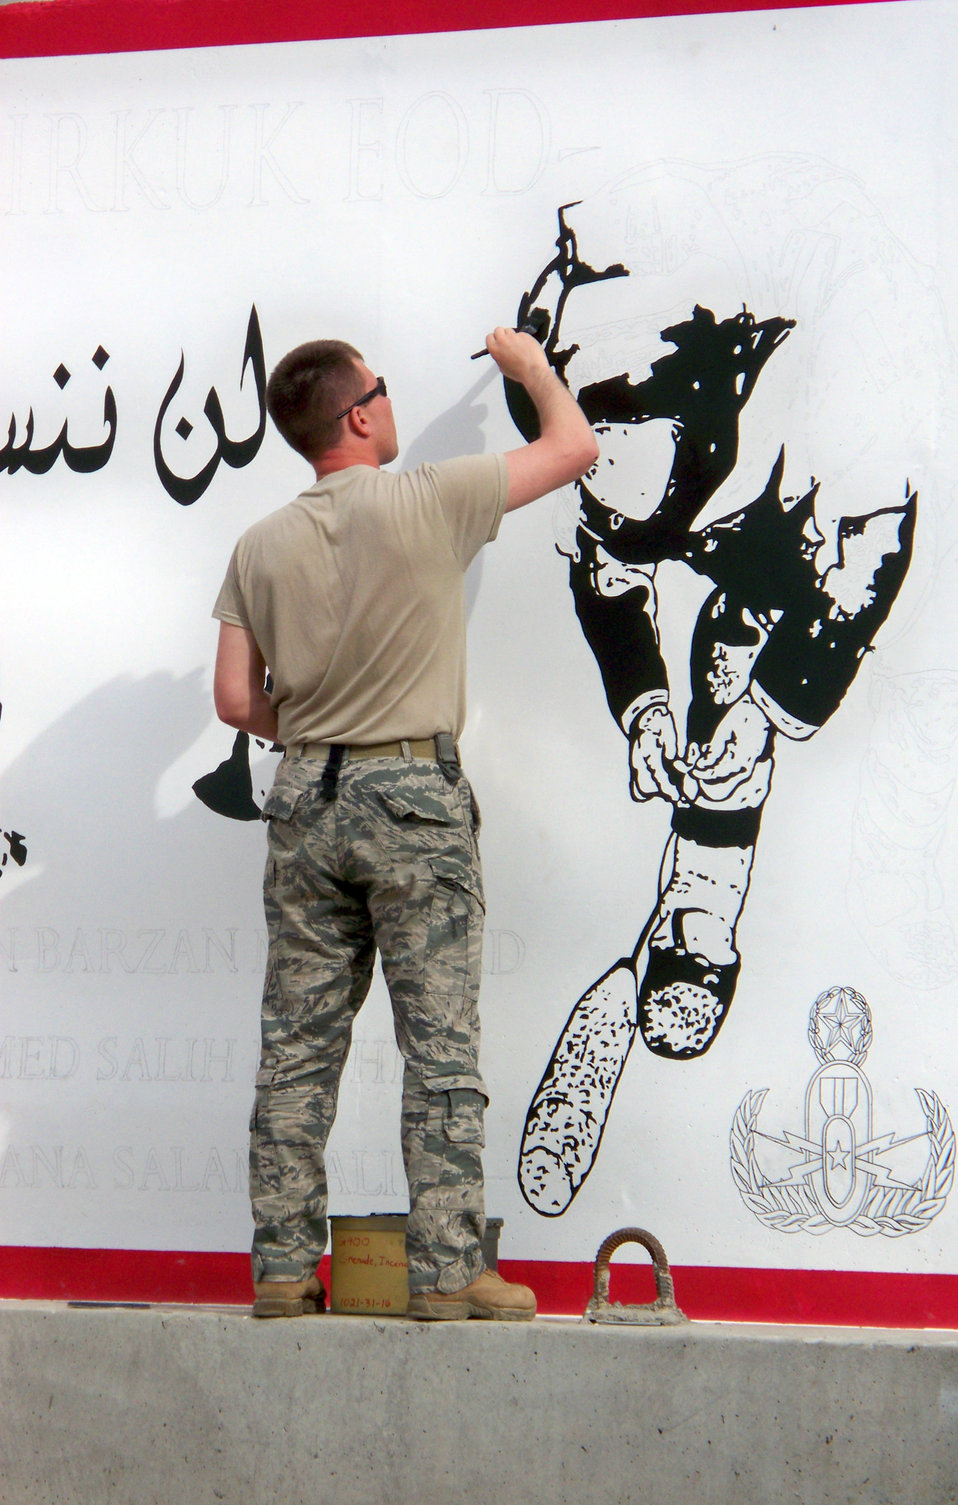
Airmen unveils memorial, raise money to honor families of fallen Iraqi comrades

Tech. Sgt. Eric Eberhard paints a mural on one of the concrete walls to honor three fallen Iraqi police counter explosive team members for an unveiling ceremony held Feb. 23, 2010, at the explosive ordnance disposal compound at Kirkuk Air Base, Iraq. Sergeant Eberhard is a 506th Civil Engineer Squadron Explosive Ordnance Disposal team leader deployed from Hill Air Force Base, Utah.